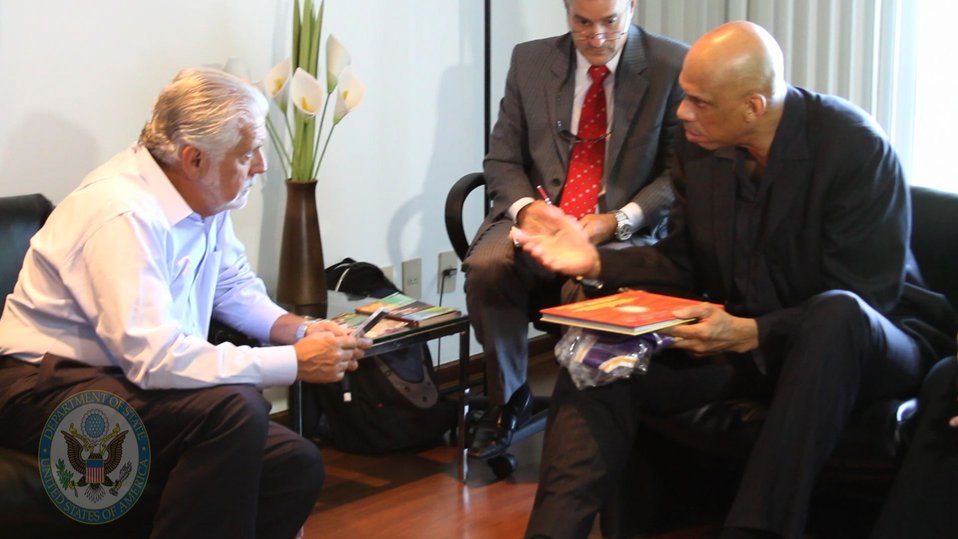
Cultural Ambassador Kareem Abdul-Jabbar Discusses Education

Hall-of-Famer and Global Cultural Ambassador for the U.S. Department of State Kareem Abdul-Jabbar discusses education, social and racial tolerance, cultural understanding, and using sports as a means of empowerment with officials in Rio de Janeiro, Brazil, on January 26, 2012.